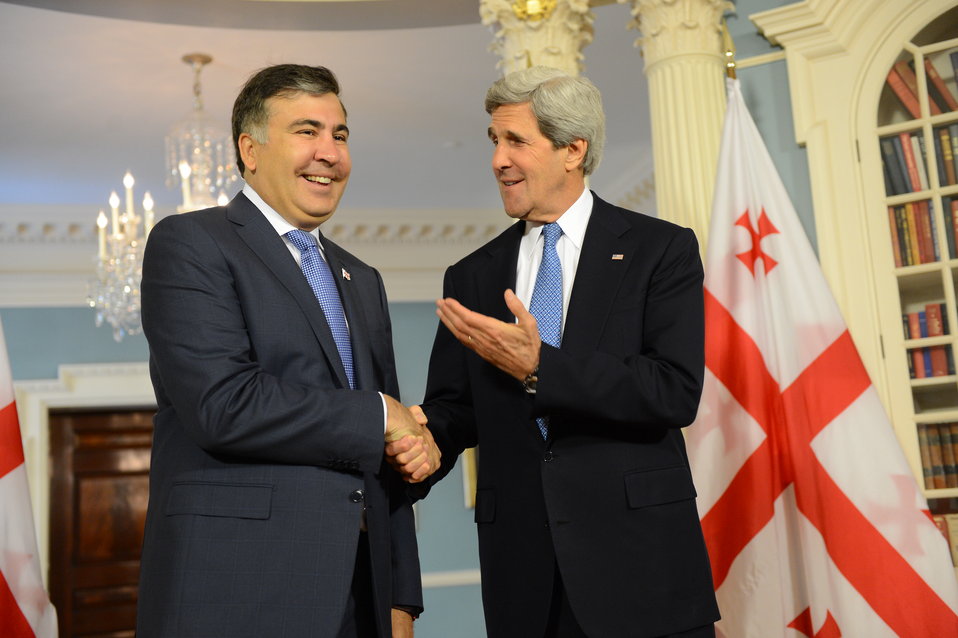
Secretary Kerry Meets With Georgian President Saakashvili

U.S. Secretary of State John Kerry meets with Georgian President Mikheil Saakashvili at the U.S. Department of State in Washington, D.C., on May 1, 2013.